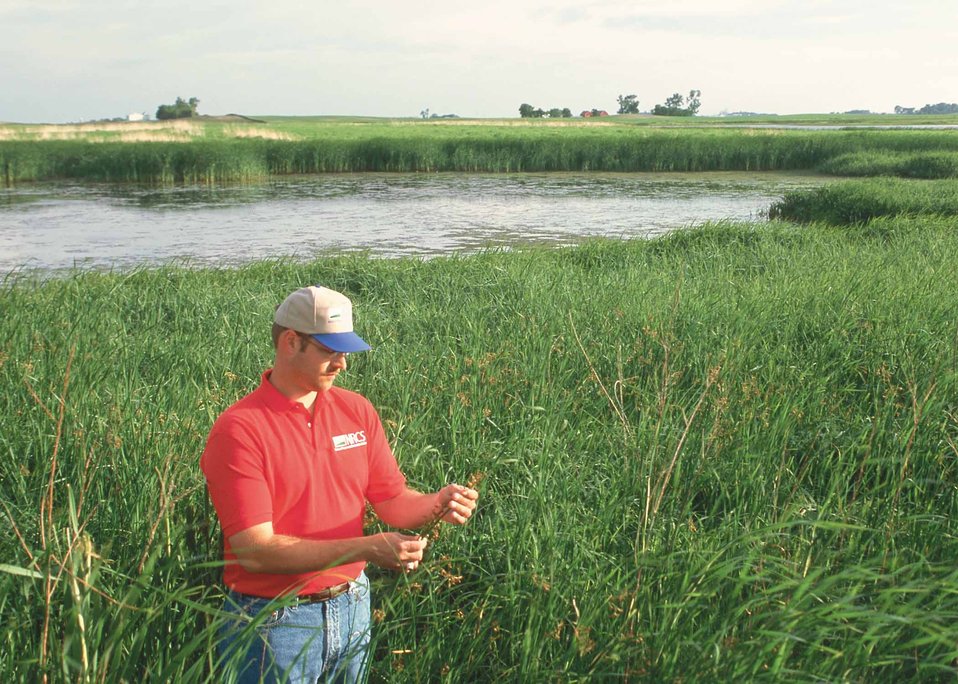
NRCS District Conservationist Dan Paulsen inspects the wildilfe habitat at this established WRP site in Kossuth County, Iowa.